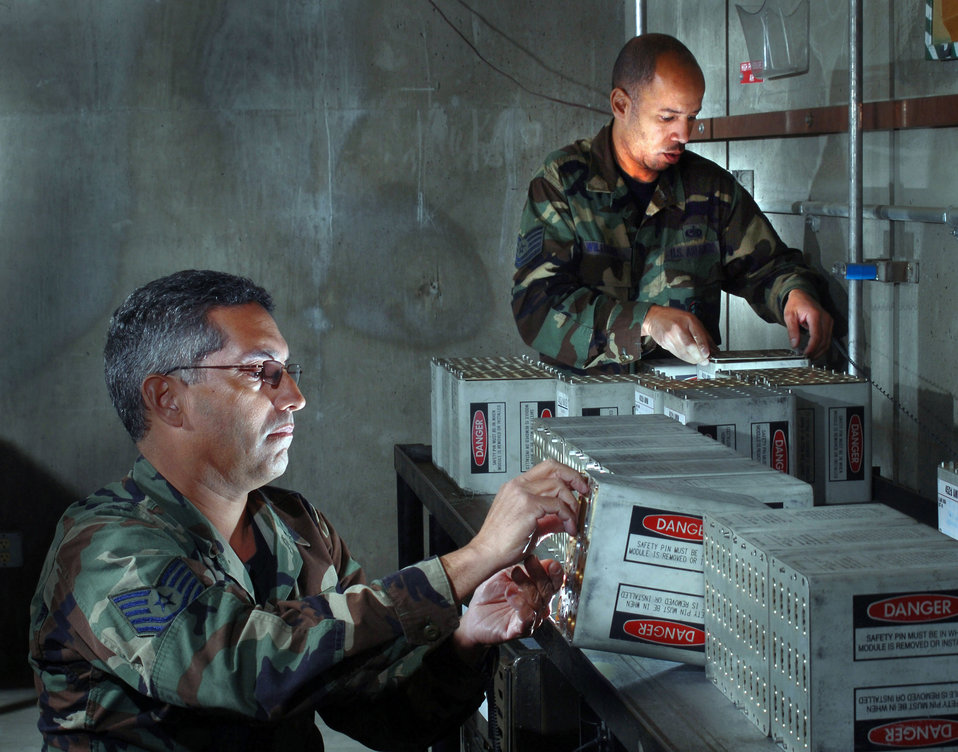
Preparing for defensive countermeasures

Tech. Sgt. Sergio Hernandez (left) reloads countermeasures flares into magazines while Tech. Sgt. Randal Williams assembles the flares on containers for a C-17 Globemaster III Feb. 18 at March Air Reserve Base, Calif. Both are air reserve technicians with the 452nd Maintenance Squadron.